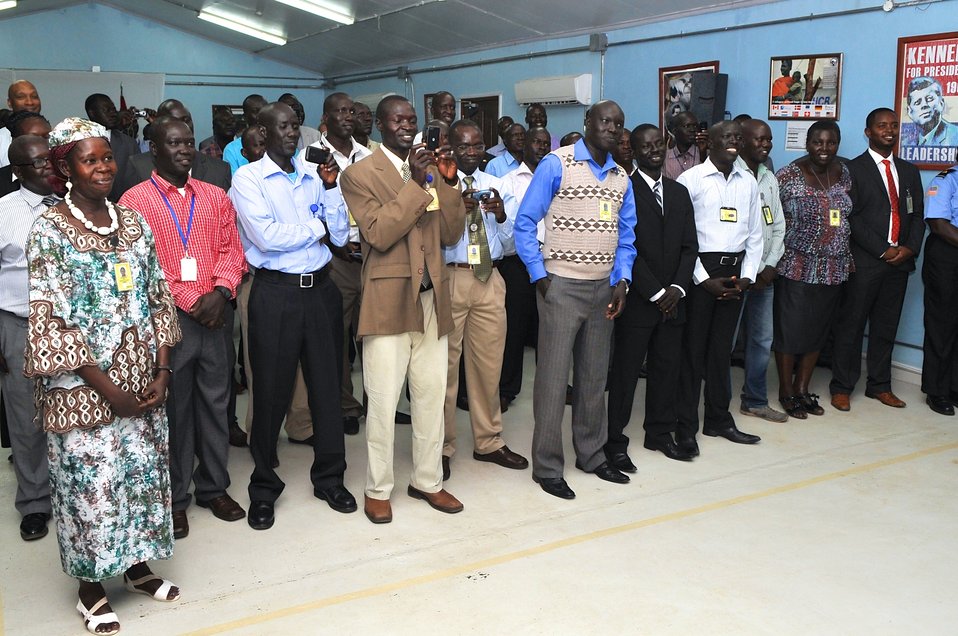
Embassy Juba Locally Hired Staff Applaud Secretary Kerry

Local residents who work at the U.S. Embassy in Juba, South Sudan, cheer U.S. Secretary of State John Kerry as he speaks to them in their compound cafeteria following his meeting with President Salva Kiir Mayardit in Juba on May 2, 2014.